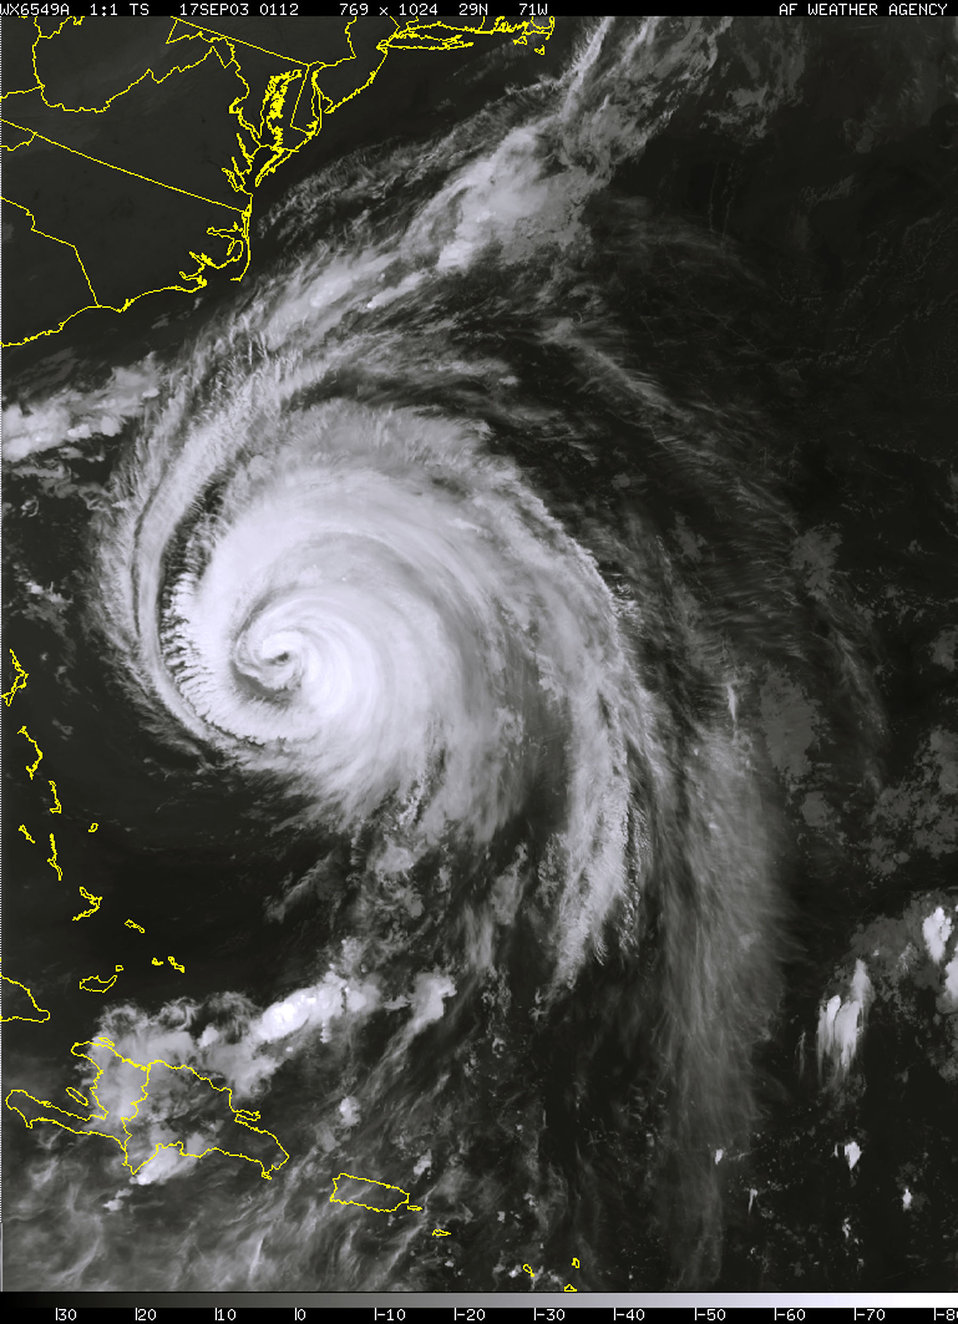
SATELLITE IMAGE -- This infrared satellite image shows Hurricane Isabel on Sept. 17.